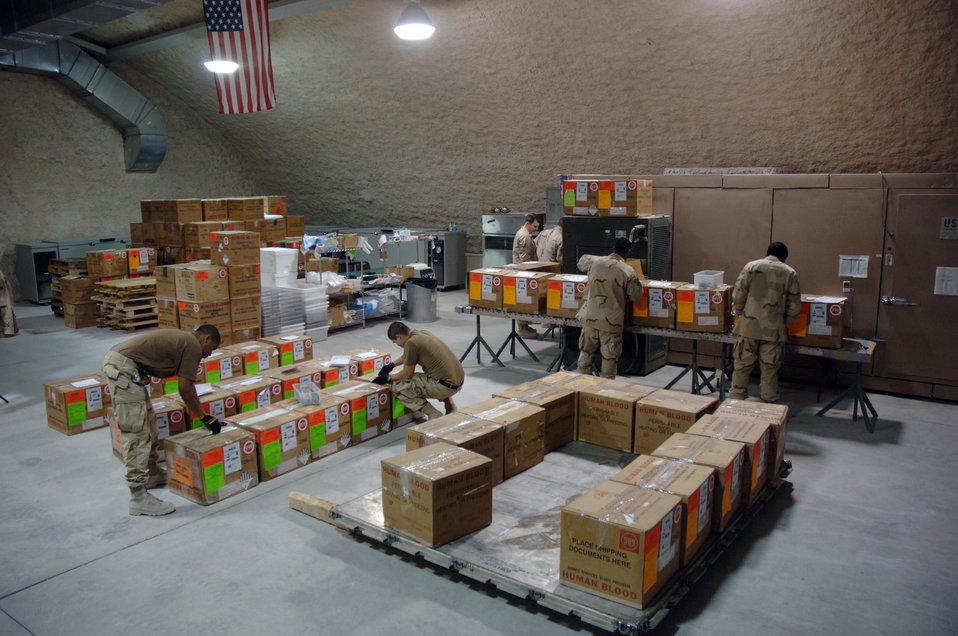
Blood samples

SOUTHWEST ASIA (AFPN) -- Members of the 379th Expeditionary Medical Support Flight blood transshipment center receive, log and prepare blood for shipment here Jan. 28. The center gets blood from the United States and sends it throughout the region.